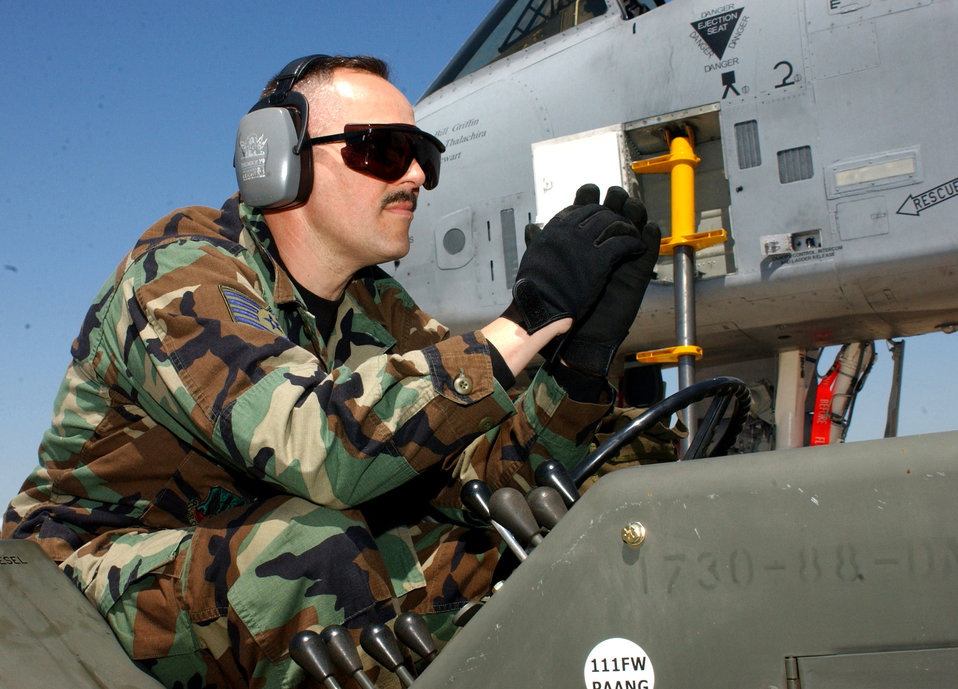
Operation Ready

Tech. Sgt. Bruce Hart observes his crew during the first phase of an operational readiness inspection at Willow Grove Air Reserve Station, Pa., on Saturday, April 29, 2006. Sergeant Hart is with the Pennsylvania Air National Guard's 111th Maintenance Squadron.